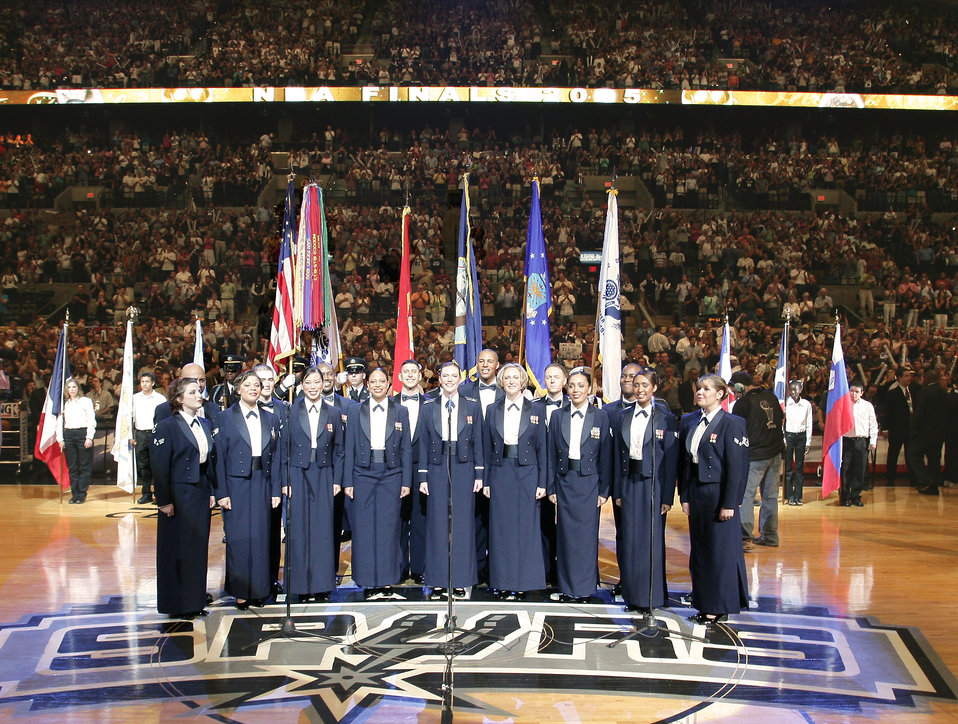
Tops Airmen tapped for NBA championship

SAN ANTONIO -- Airmen with the Air Force's premier expeditionary entertainment troupe, Tops In Blue, sang the national anthem before game 6 of the National Basketball Association finals here June 21. Eighteen vocalists from the 2005 Tops In Blue team performed the anthem before the nationally televised game between the Detroit Pistons and the San Antonio Spurs.